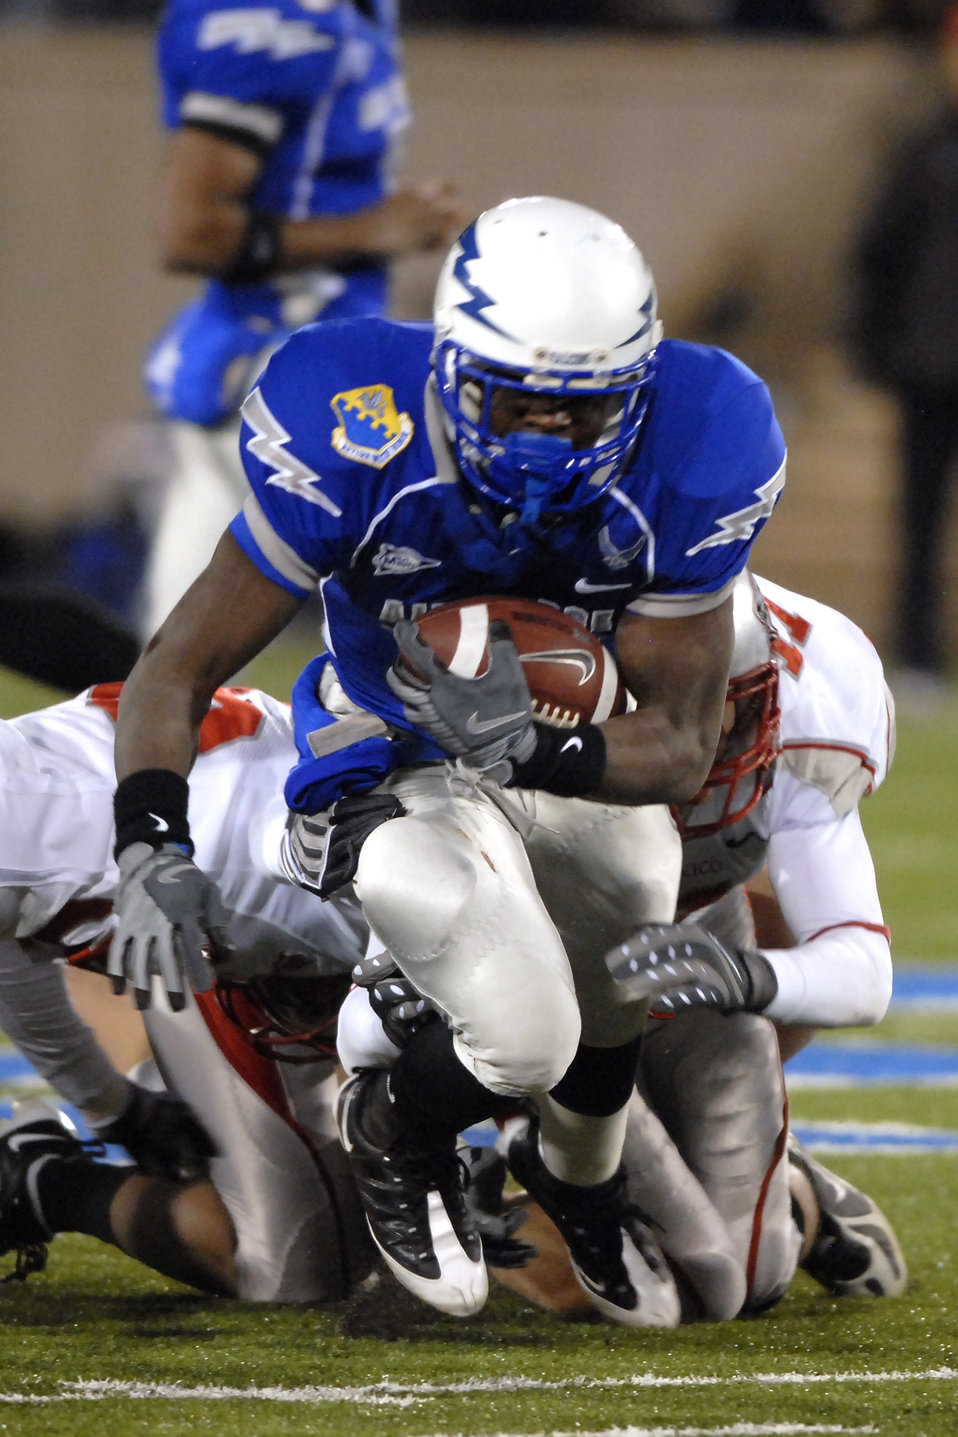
Football: Opportunistic Falcons topple New Mexico

U.S. Air Force Academy freshman tailback Asher Clark works his way through tacklers for a short gain up the middle. Clark was the Falcons leading rusher, carrying the ball 23 times for 86 yards during the 23-10 win over New Mexico, Oct. 23 at Falcon Stadium in Colorado. With the win, the Falcons are now bowl-eligible at 6-2 and return to the gridiron Nov. 1 at Army.